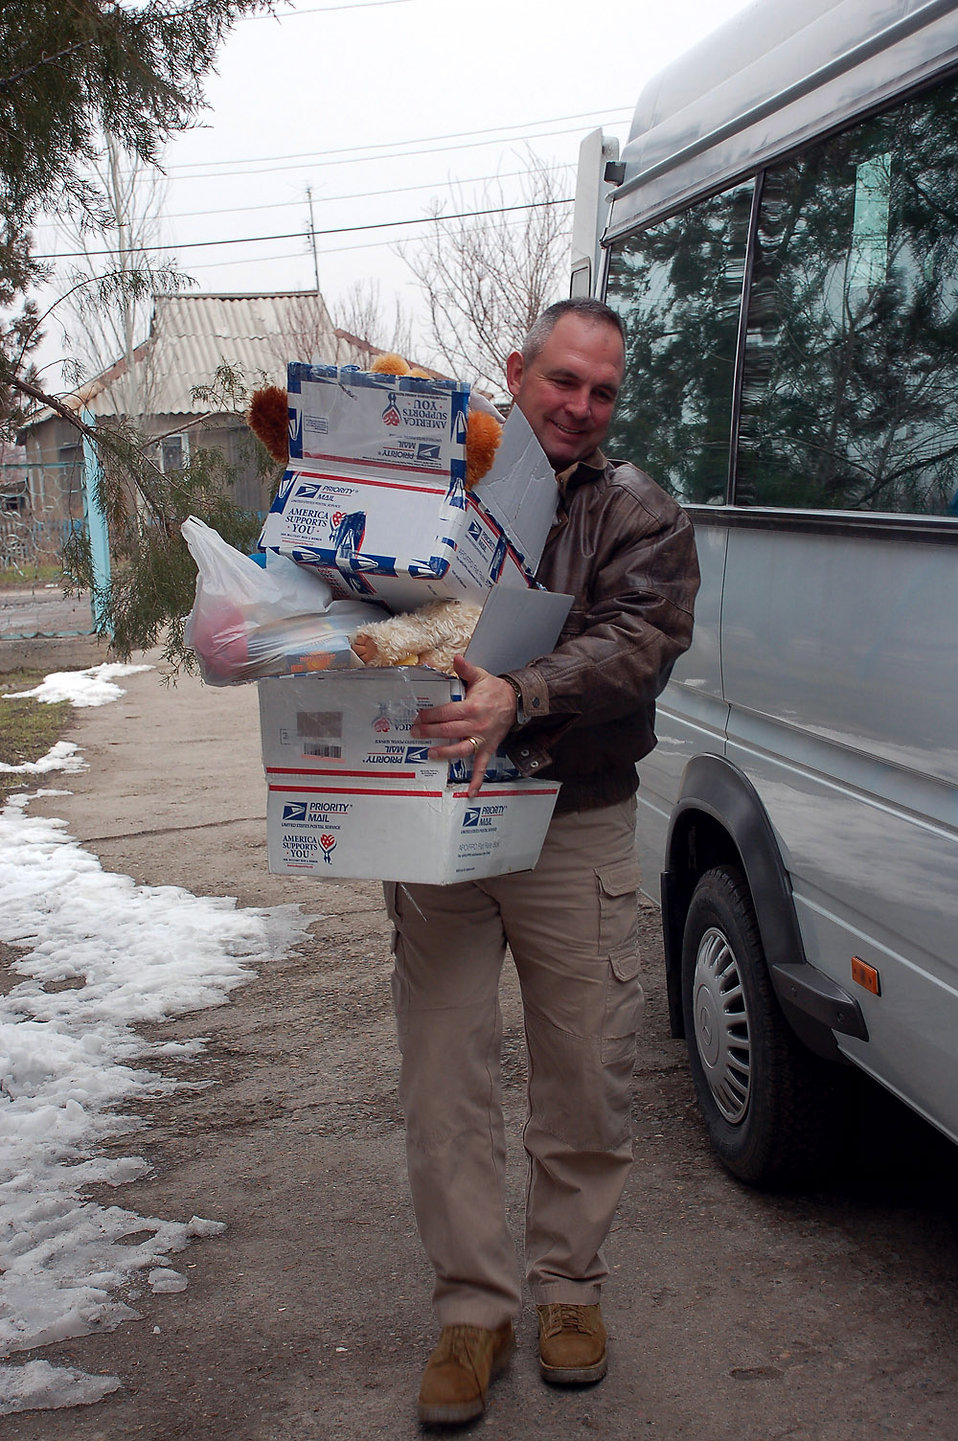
Kyrgyz children thank Manas volunteers

Tech. Sgt. Chad West carries care packages full of toys and school supplies for children Feb. 20 at the Vasilievka Kindergarten School in Vinogradnoye Village. Sergeant West and other volunteer Airmen from the 376th Expeditionary Operations Group and the Air Expeditionary Wing staff at Manas Air Base, Kyrgyzstan, recently delivered a new generator, refrigerator and stove to the school through the Manas Service Organization. Sergeant West is deployed with the 376th Expeditionary Security Forces Squadron deployed from the Arkansas Air National Guard at Fort Smith.